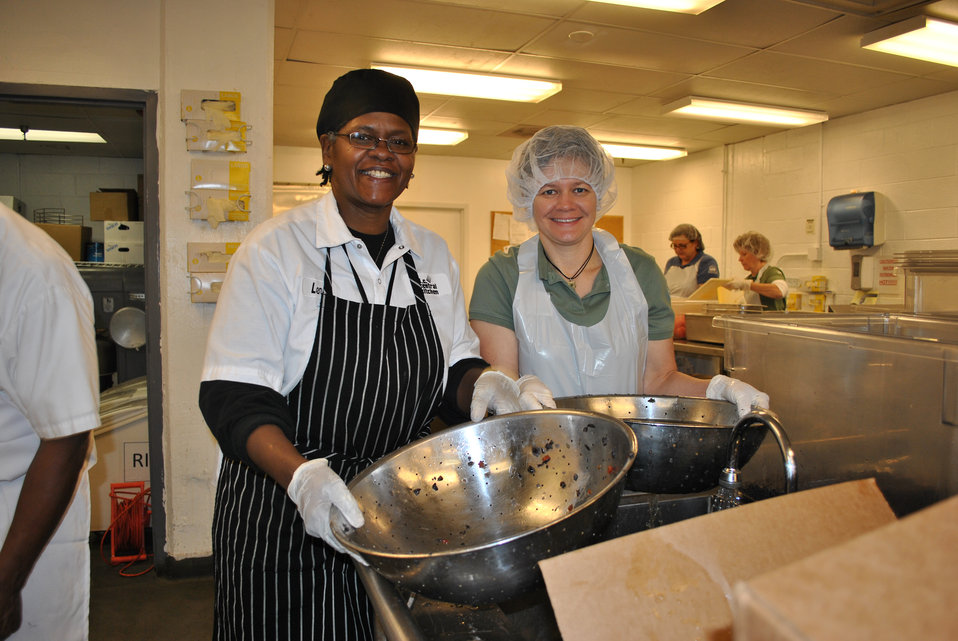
U.S. Department of Agriculture (USDA) Food Safety and Inspection Service (FSIS) volunteer Maggie Mills and DC Central Kitchen Production Cook Lena Watts spent three hours washing black beans, the main ingredient in the bean burrito dish.